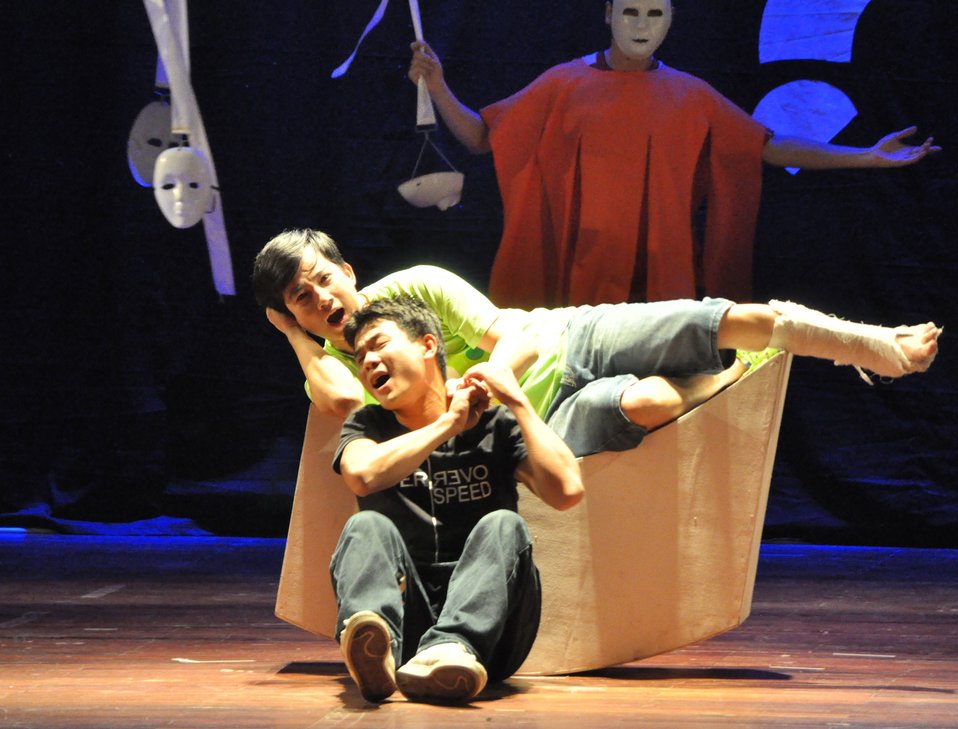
PEPFAR Musical Questions and Exclamations

Hanoi, May 17, 2013